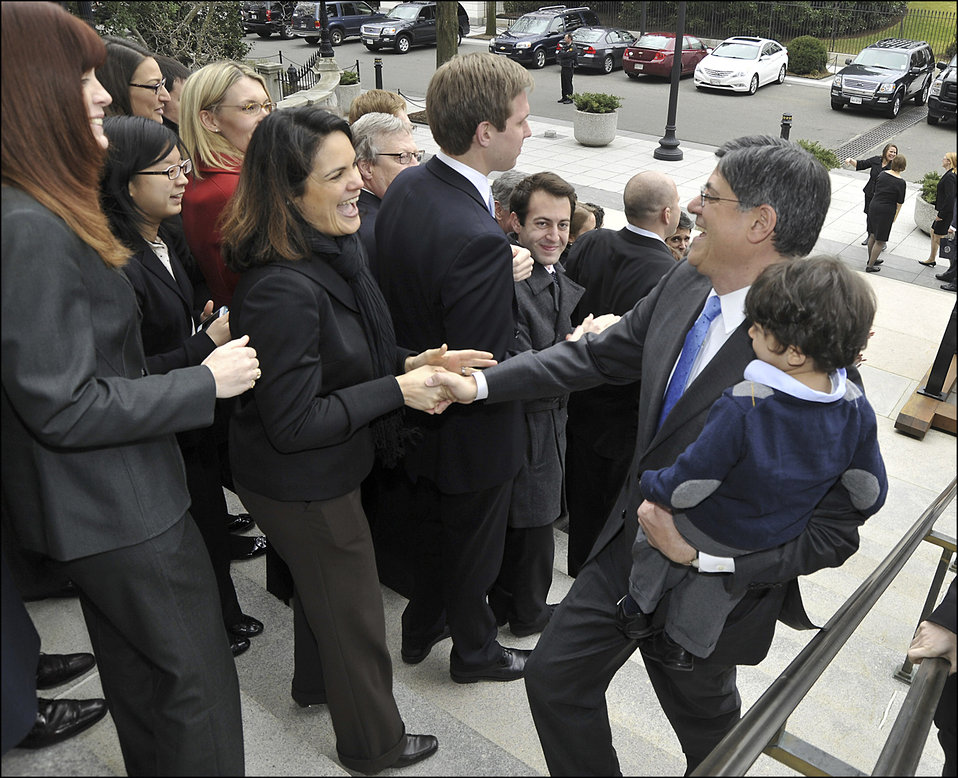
Staff welcome Secretary Lew to the Treasury Department right after his swearing-in ceremony